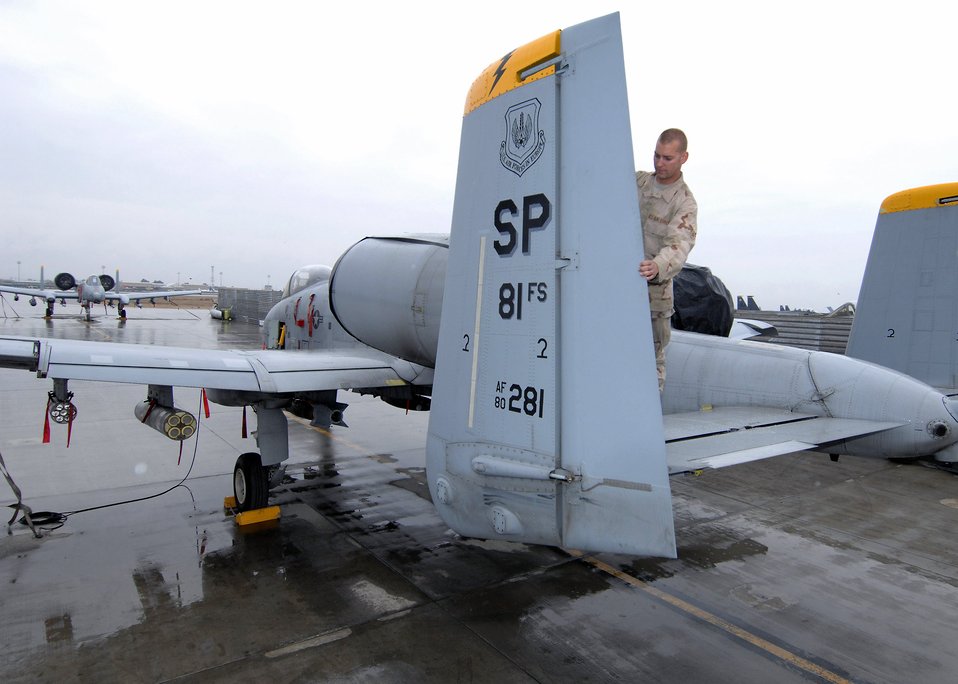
Checking it out

Airman 1st Class Sean Story inspects the rudder of the oldest A-10 Thunderbolt in the U.S. Air Forces in Europe command April 9 at Bagram Air Base, Afghanistan. Airman Story is deployed from Spangdahlem Air Base, Germany.